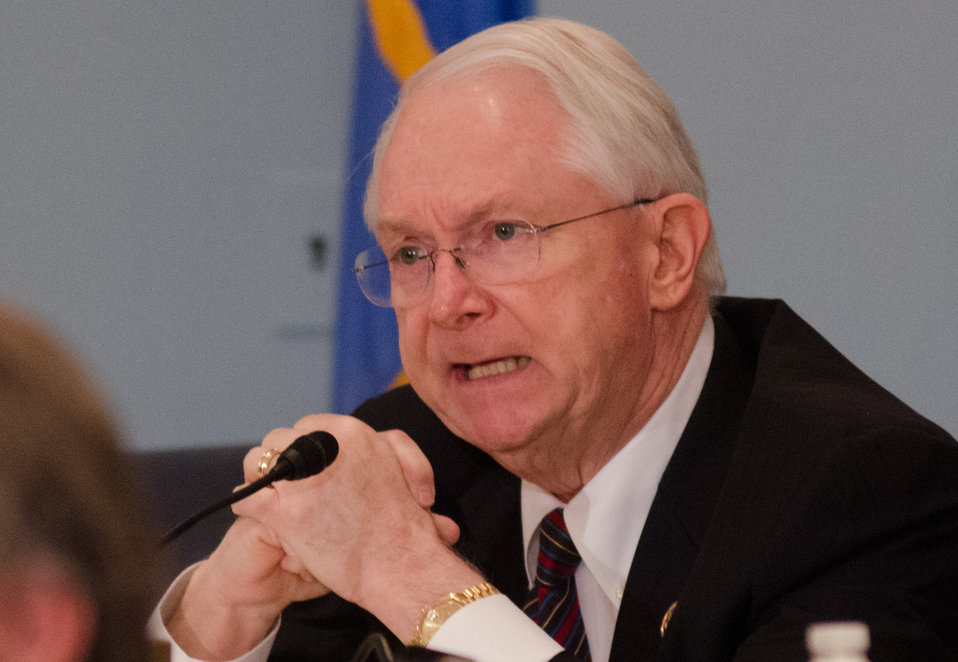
Representative Randy Neugebauer (TX) questions Agriculture Secretary Tom Vilsack, during his testimony before the House Agriculture Committee regarding the “State of the Rural Economy“ at the Longworth House Office Building in Washington, D.C. on Tuesday, Mar. 5, 2013.